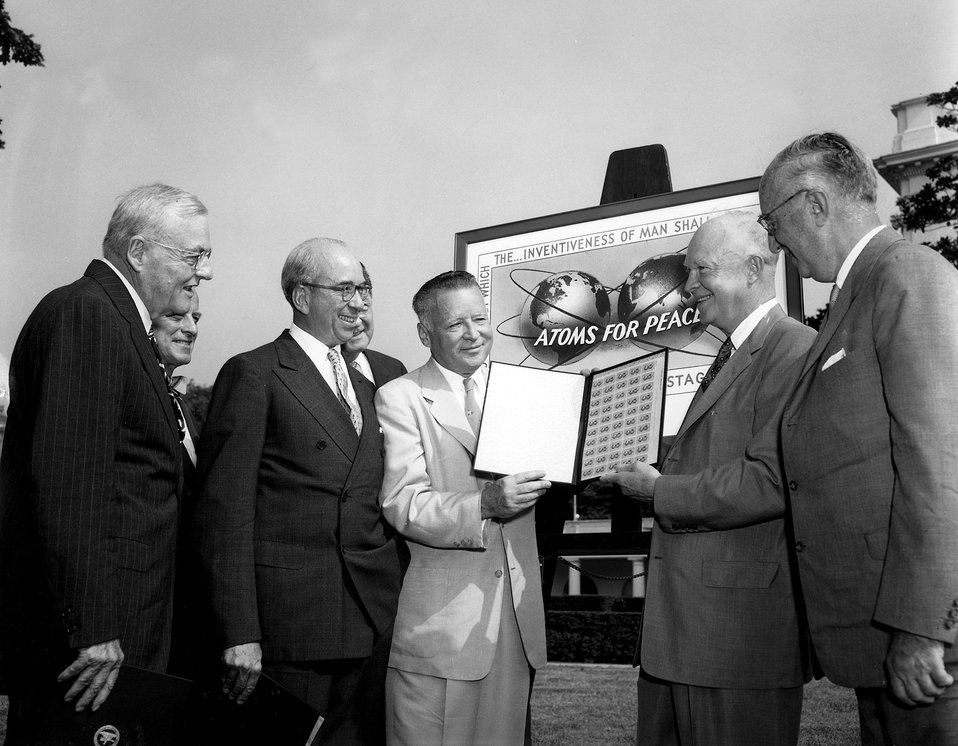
President Eisenhower receives an album of Atoms-for-Peace stamps.